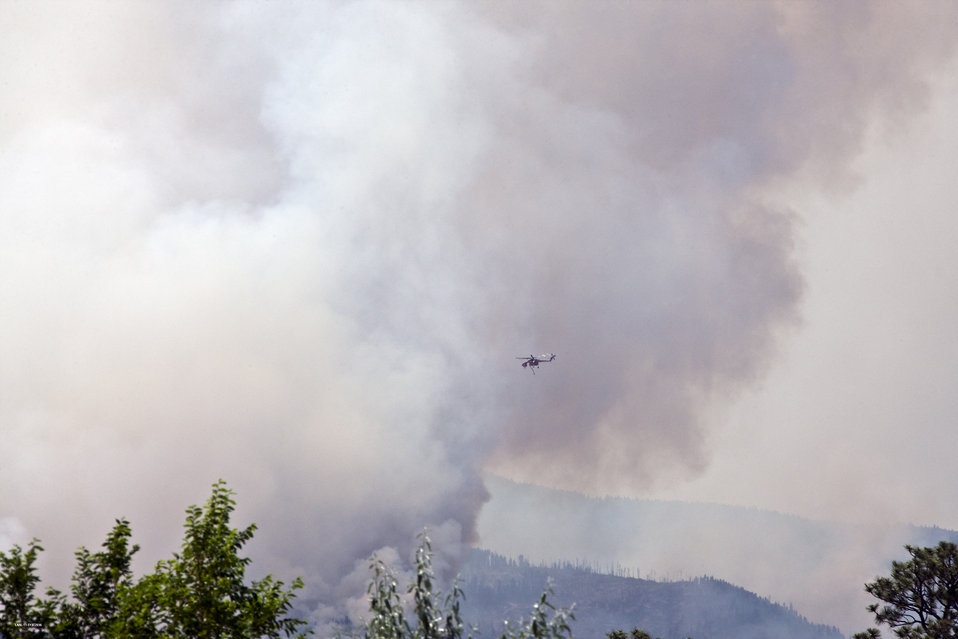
Protecting Recovery Act Cleanup Site During Massive Wildfire

July 2011 - Effective safety procedures in place at Los Alamos National Laboratory would have provided protections in the event that the raging Las Conchas
fire had spread to the site of an American Recovery and Reinvestment Act project.

The Las Conchas fire forced Los Alamos National Laboratory to close for more than a week.